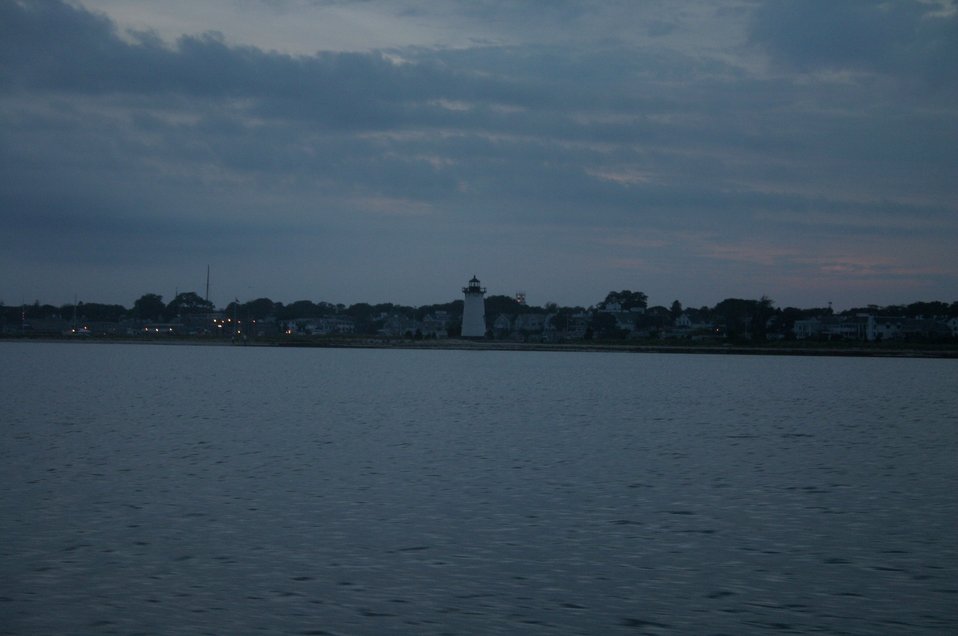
The lighthouse at Edgartown at dusk.